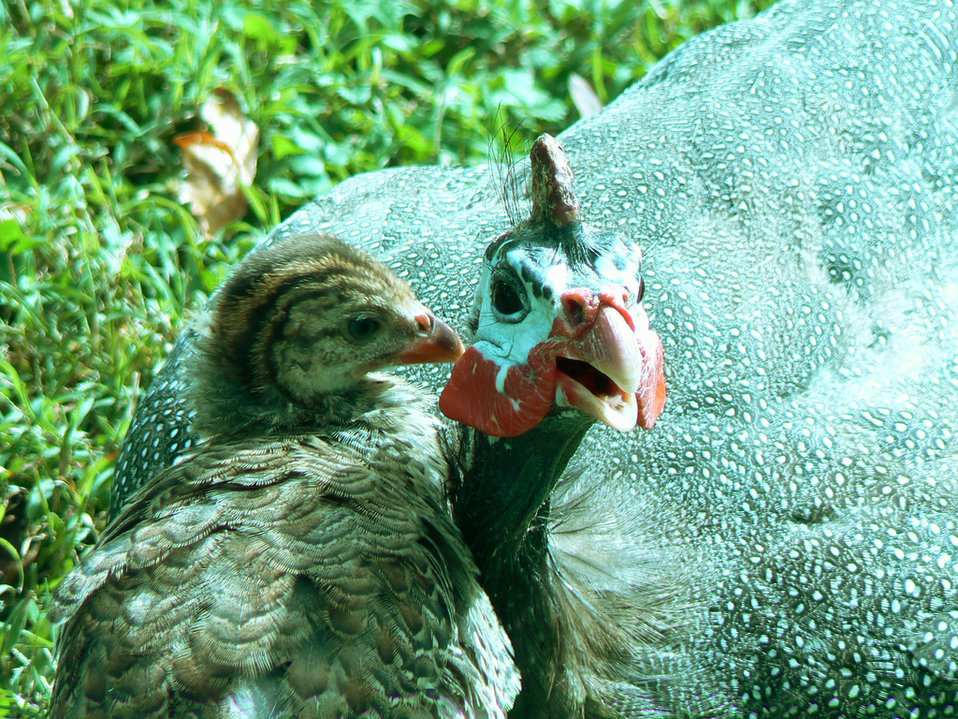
Guinea hen and chick at Cape May National Wildlife Refuge.